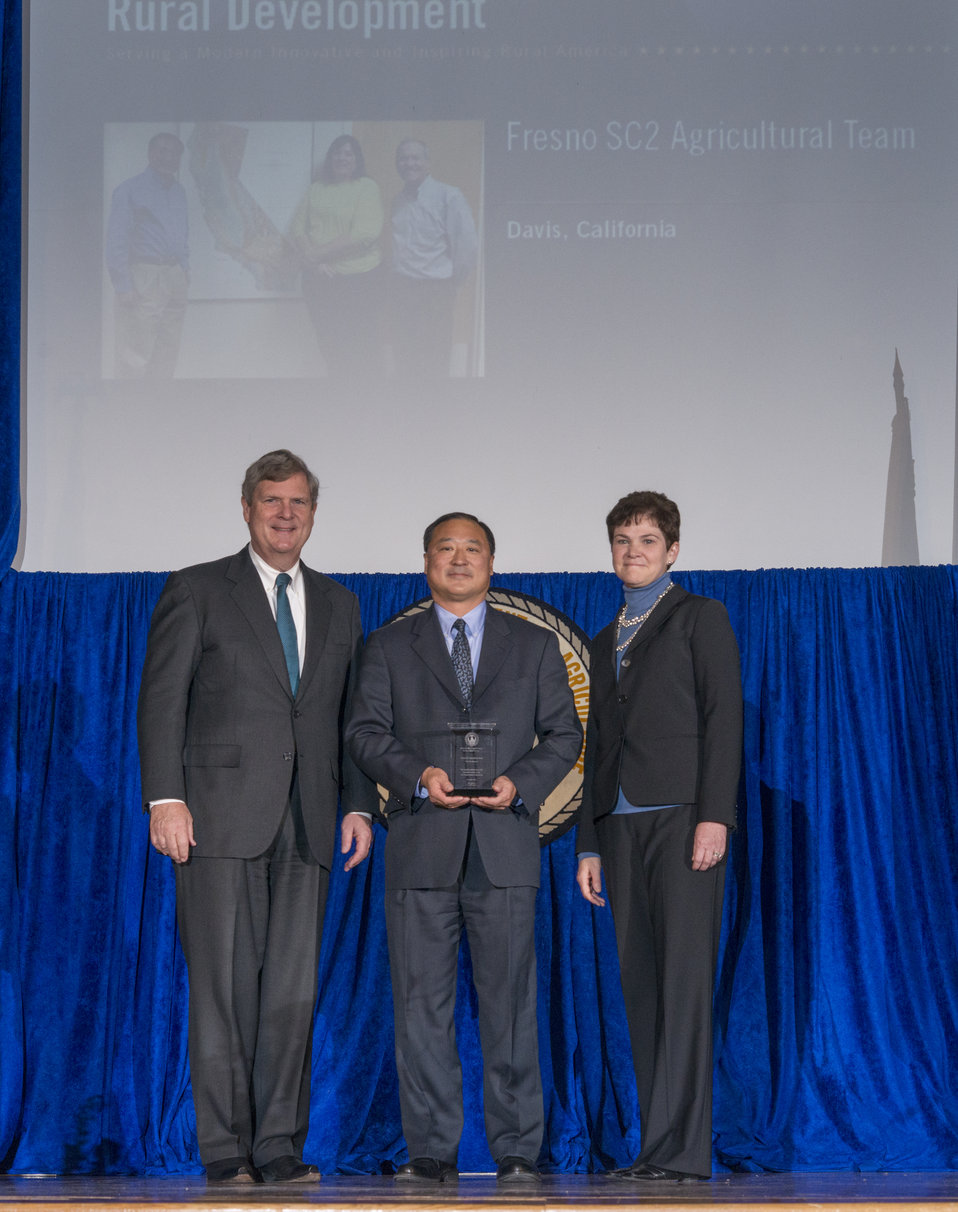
Agriculture Secretary Tom Vilsack and Agriculture Deputy Secretary Krysta Harden present the Secretary’s Honor Award to Fresno SC2 Agricultural Team, Rural Development (RD) in Davis, CA Group leader Robert Tse for leading a successful White House Strong Cities Strong Communities initiative in Fresno by implementing a regional economic strategy including agriculture technology and broadband at the 2013 Secretary's Honor Awards in the Jefferson Auditorium at the U.S. Department of Agriculture (USDA) in Washington, D.C. on Wednesday, Dec. 11, 2013.